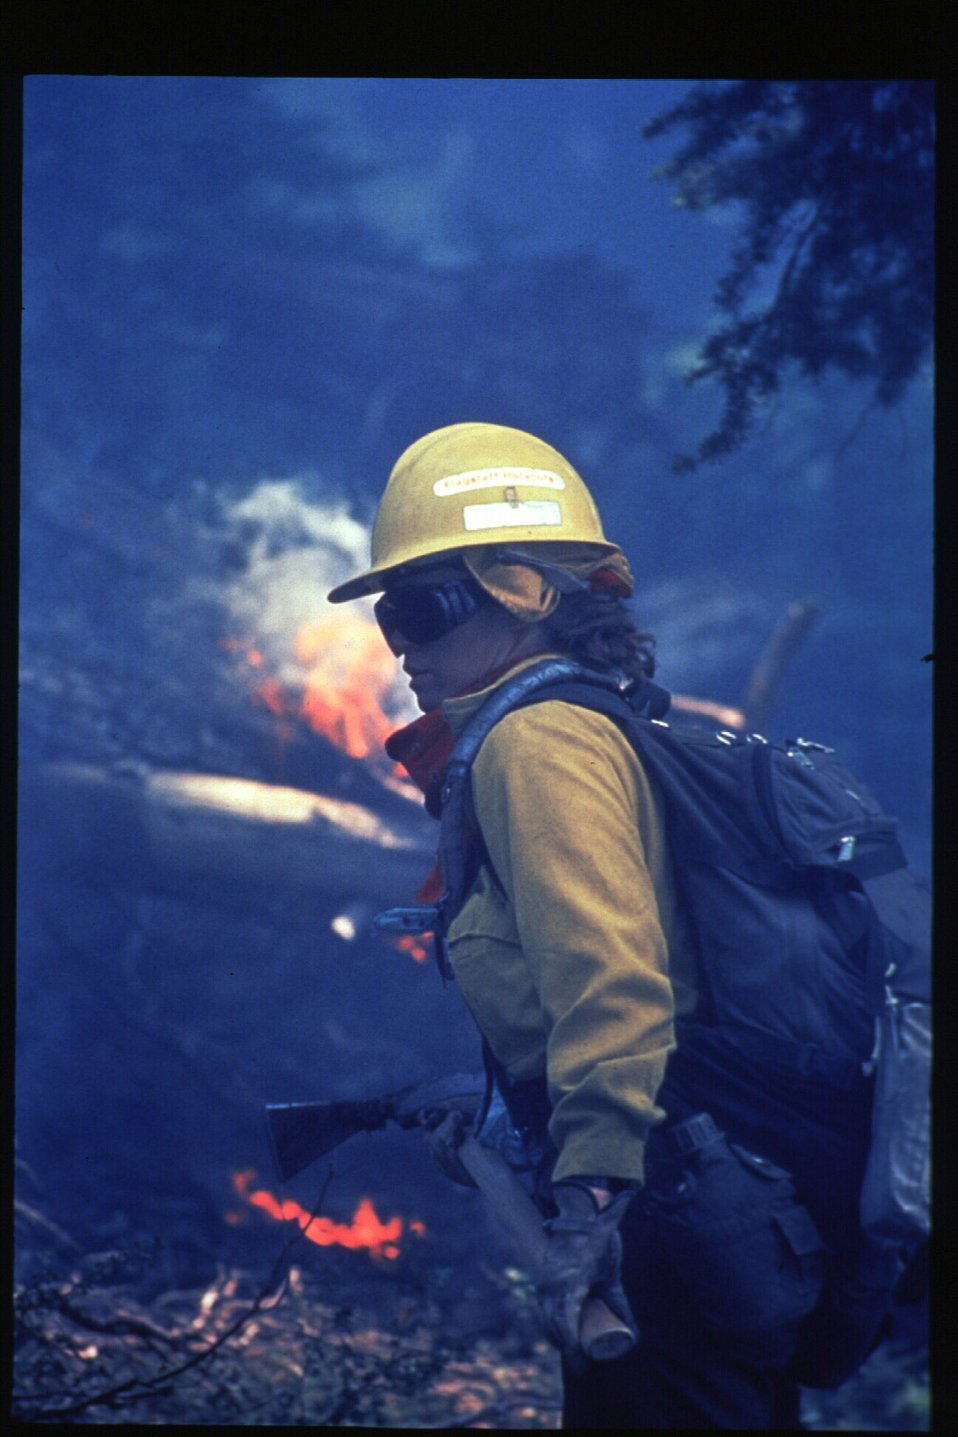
Boise Foothills Fire Danskin Mountains and South Fork of Boise River Wild Fire Fighter Four River Field Office LSRD Lower Snake River District